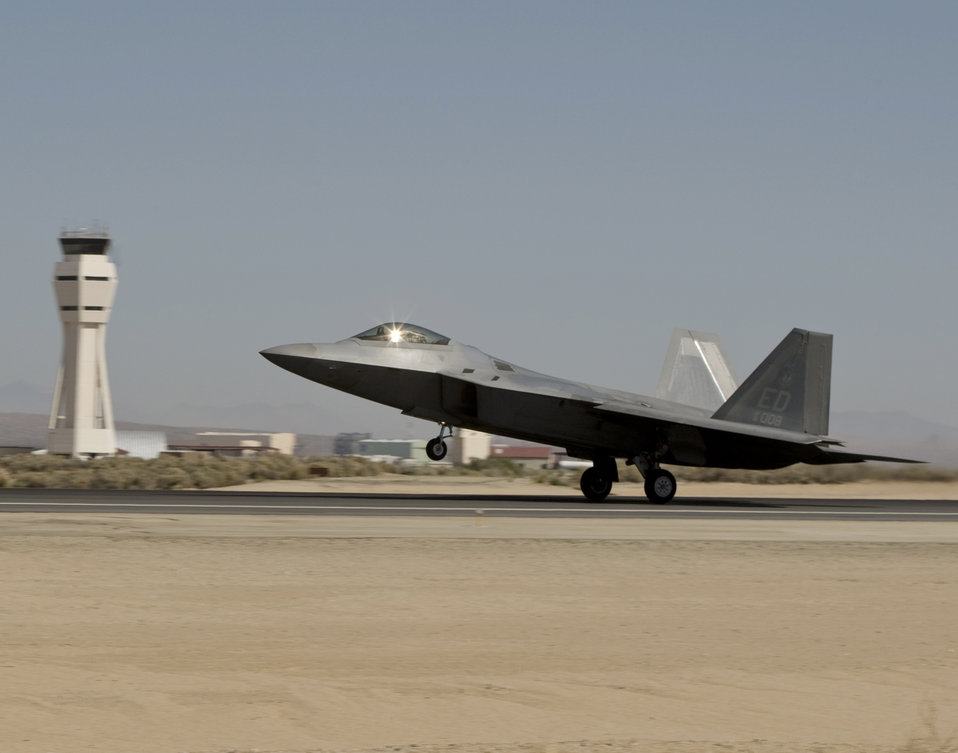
F-22 refuels with synthetic fuel

An F-22 Raptor takes off from Edwards Air Force Base, Calif., Aug. 28 to take part in an aerial refueling test using an alternative jet engine fuel -- a first for an Air Force aircraft. The fuel is a 50/50 mix of JP-8 jet fuel and a natural gas-based fuel.